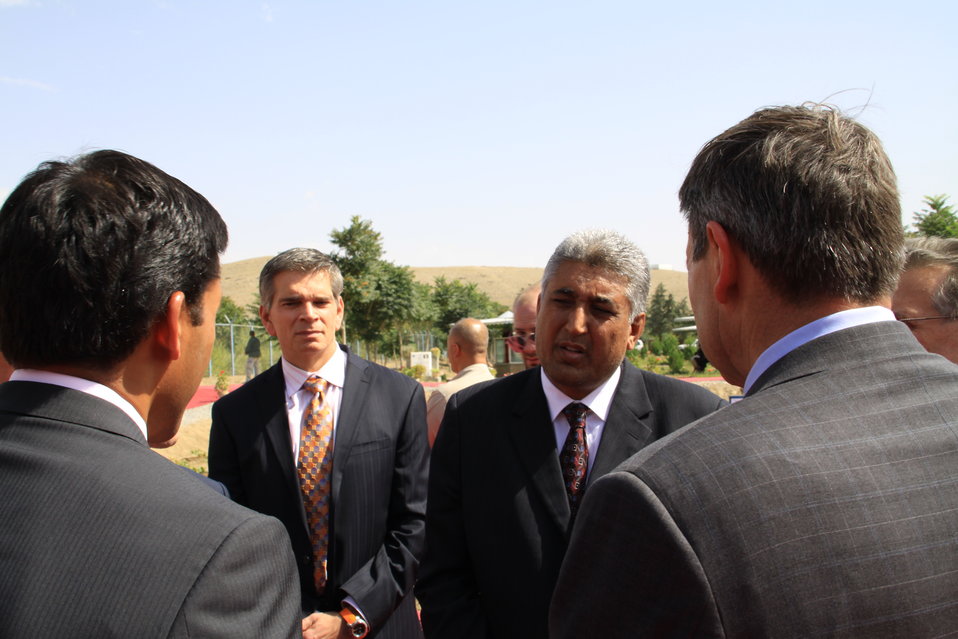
Badam Bagh Farm